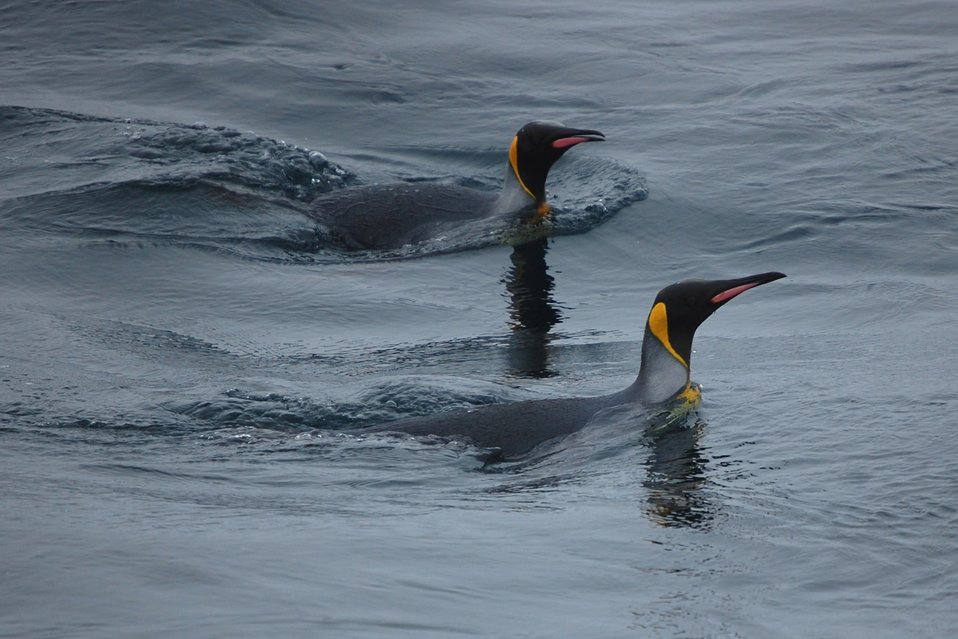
King penguins.